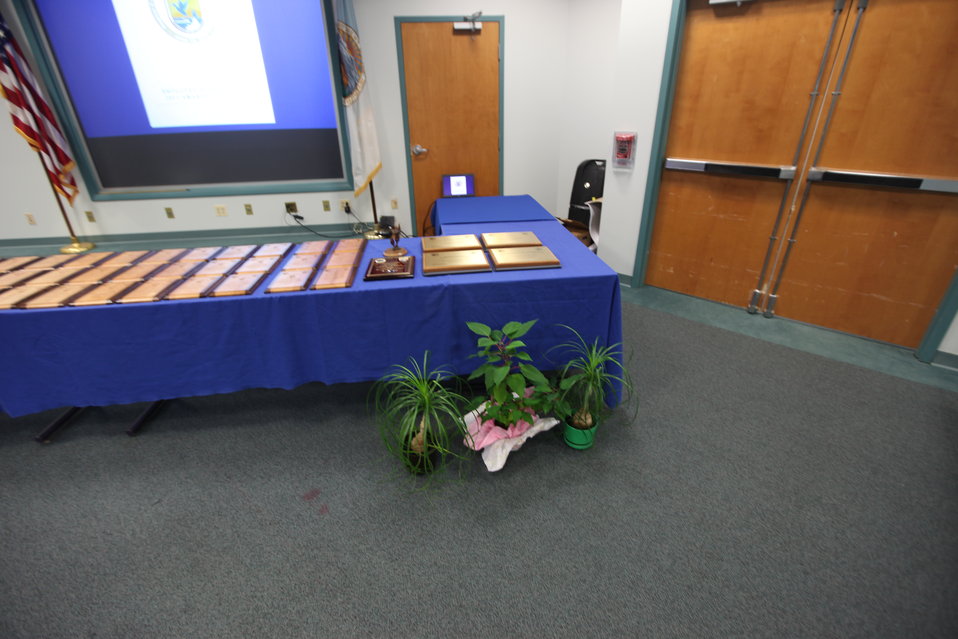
Northeast Region Employee Appreciation Awards